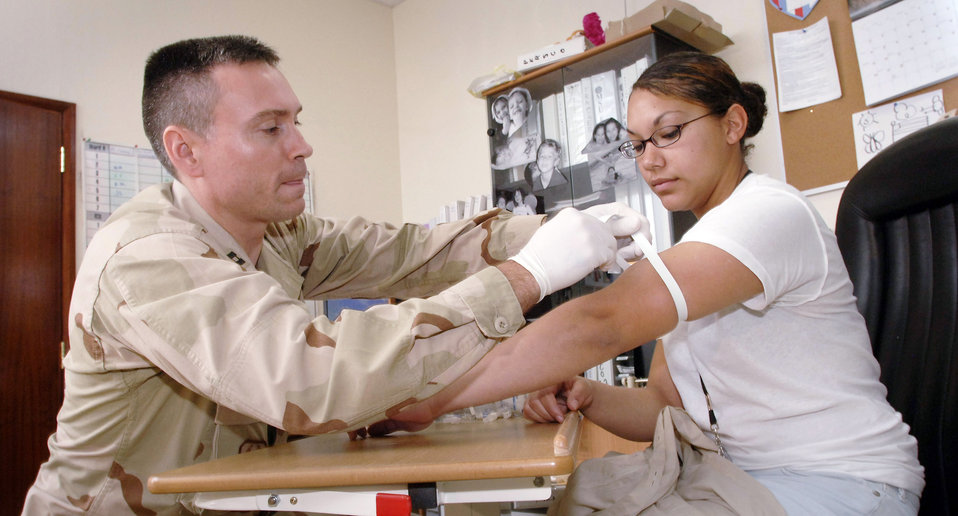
Doctoring downrange

SOUTHWEST ASIA (AFPN) -- Capt. Christopher Dremann prepares Pfc. Brittany Embry for an intravenous tube before she has minor surgery later in the day. The 379th Expeditionary Medical Group is treating Private Embry in an expeditionary medical support unit that provides medical care of forward deployed personnel while still in theater. She is assigned to the 101st Airborne Division at Camp Stryker, Iraq.